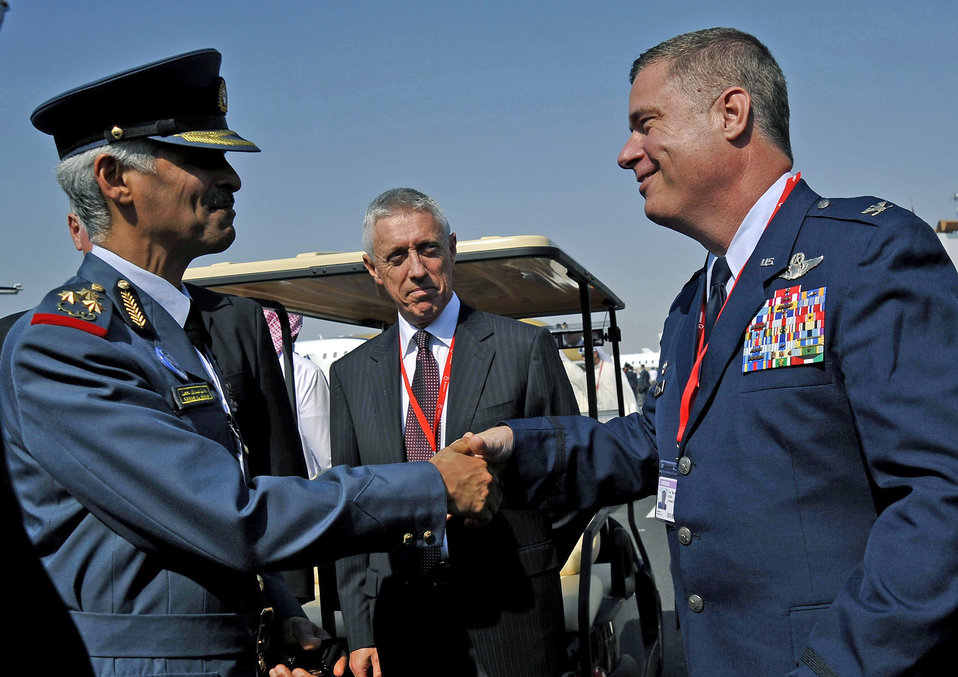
Airmen support inaugural Bahrain International Airshow

Col. Michael Cosby shakes hands with a member of the Bahraini air force during the Bahrain International Airshow Jan. 21, 2010. Colonel Cosby is the Kuwait air force operational advisor.